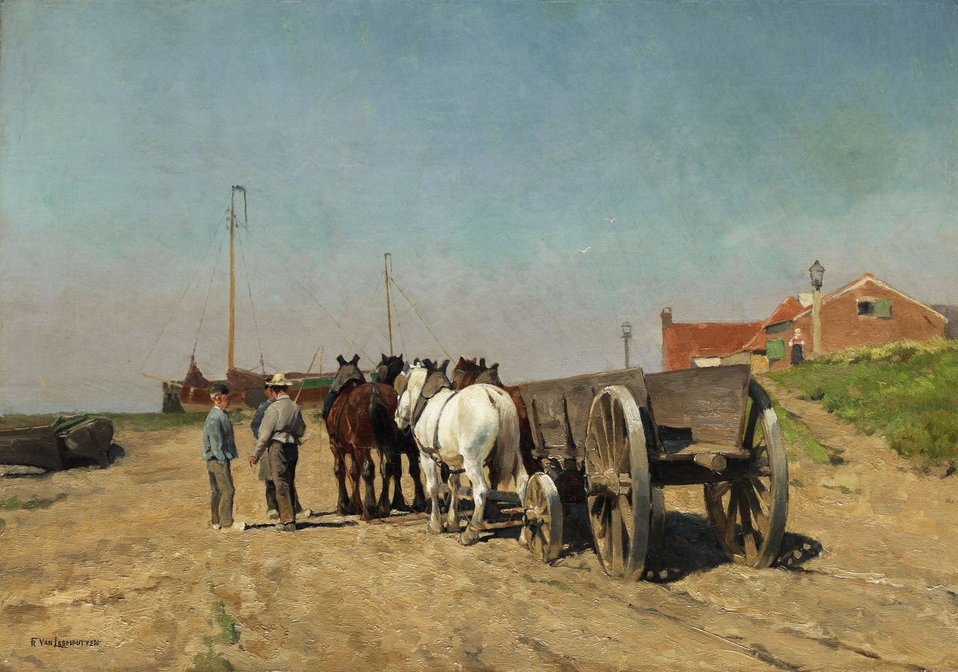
Pferdegespann mit Lastkarren auf einer sandigen Uferstraße. Öl auf Leinwand. 35 x 51 cm. Links unten signiert.